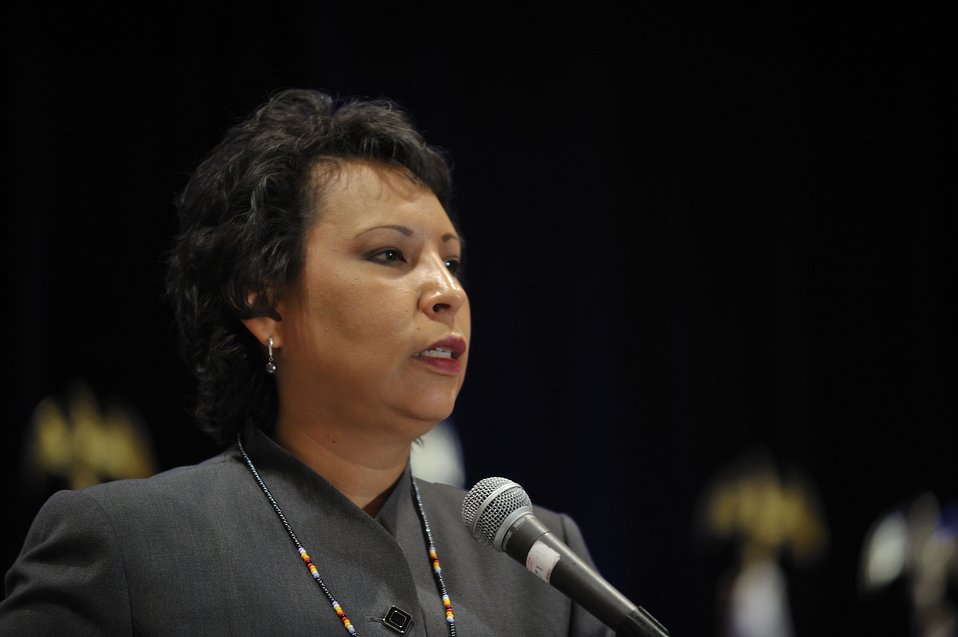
Tribal Energy Summit

Tracey LeBeau, Director of the DOE Office of Indian Energy Policy and Programs opens the DOE Tribal Summit